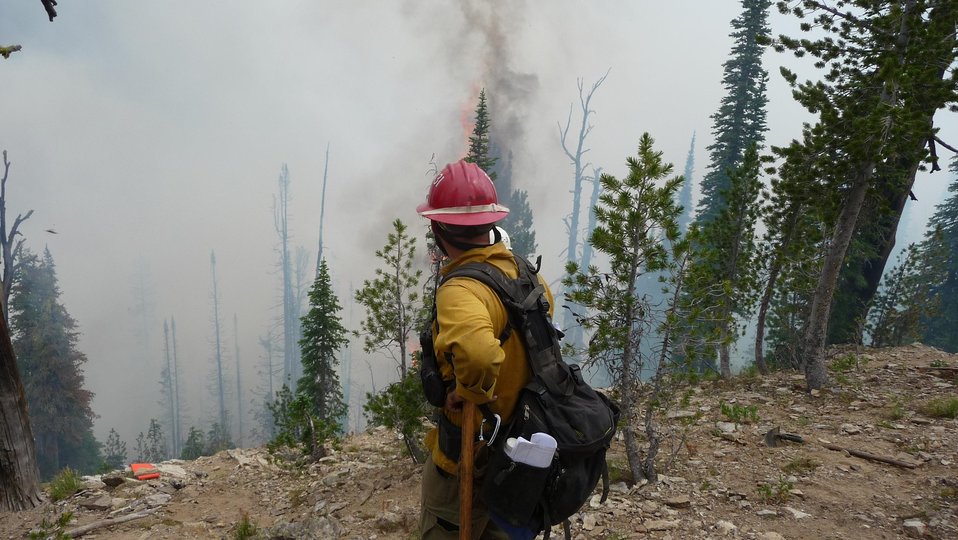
Firefighter watches the behavior of the Thunder City Fire. The Thunder City Fire in the Payette National Forest near Stibnite, ID began on Jul. 19, 2013 by lightning and has consumed approximately 1,520 acres and is approximately 15% contained.